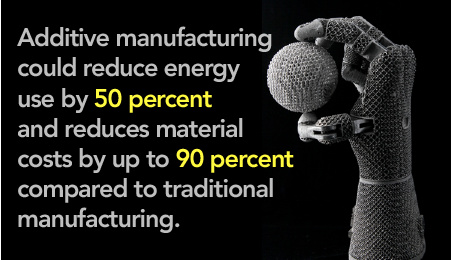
Saving Energy and Resources

Thanks to additive manufacturing technology, Oak Ridge National Laboratory was able to fabricate a robotic hand with less energy use and material waste. The novel, lightweight, low-cost fluid powered hand was selected for a 2012 R&D 100 award.